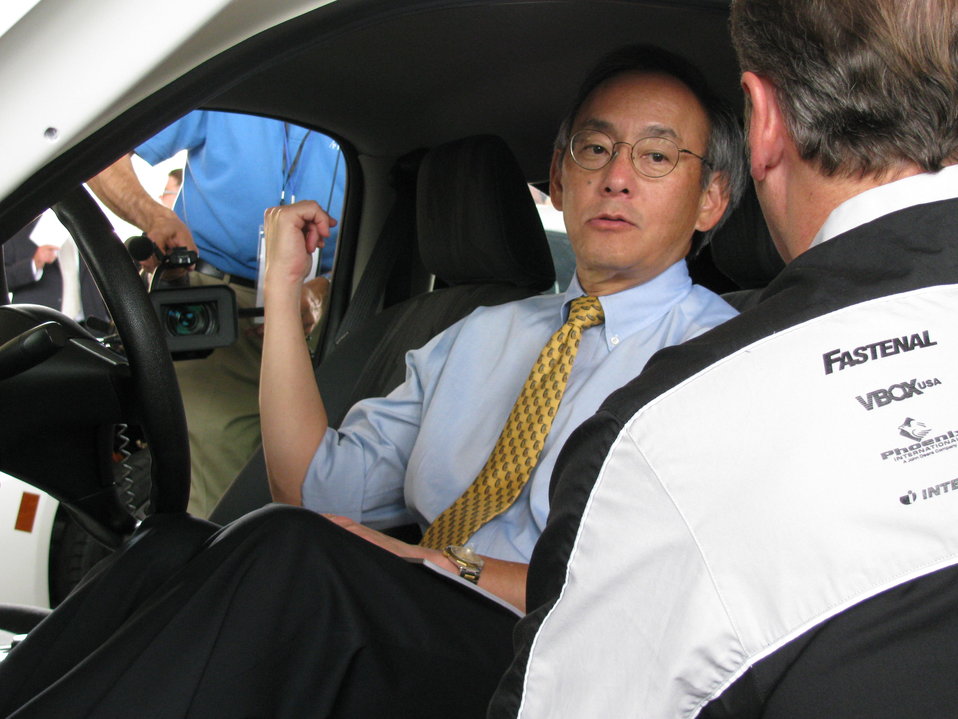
X Prize 042